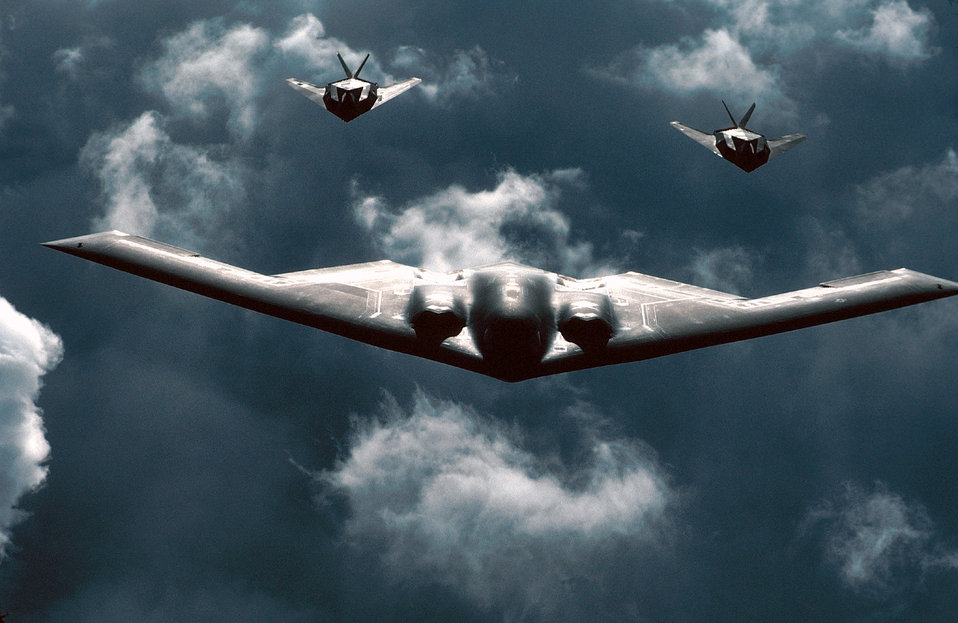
Stealthy trio

FILE PHOTO -- A B-2 Spirit bomber is followed by two F-117 Nighthawks during a mission. The B-2 is a multi-role bomber capable of delivering both conventional and nuclear munitions. A dramatic leap forward in technology, the bomber represents a major milestone in the U.S. bomber modernization program. The B-2 brings massive firepower to bear, in a short time, anywhere on the globe through previously impenetrable defenses.